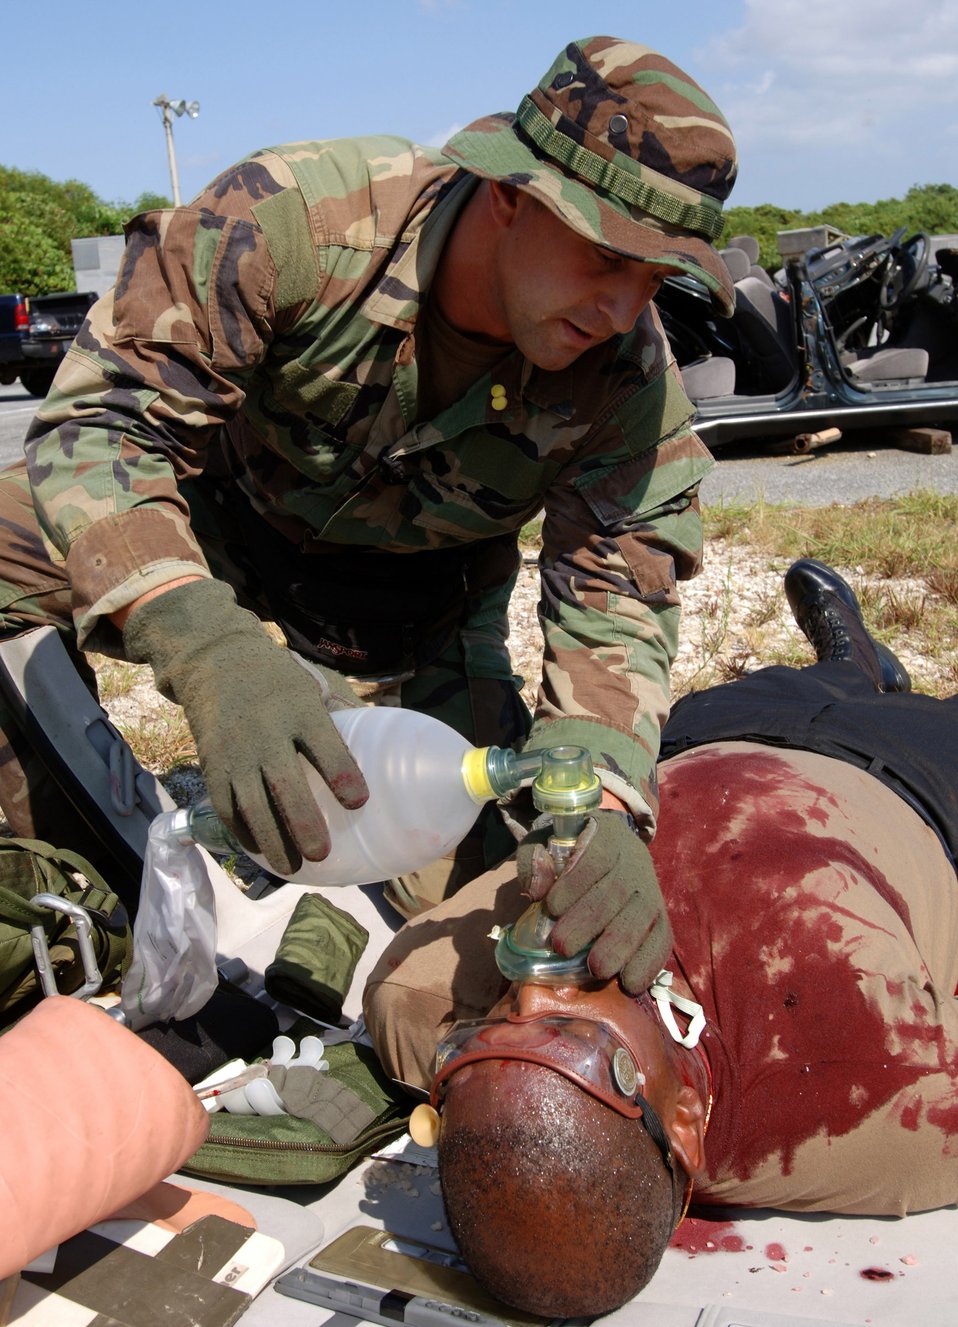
To the rescue

KADENA AIR BASE, Japan -- Senior Airman Sean Cole provides assistance to Tech. Sgt. Handel Stewart during a situational medical exercise here. During training, pararescuemen